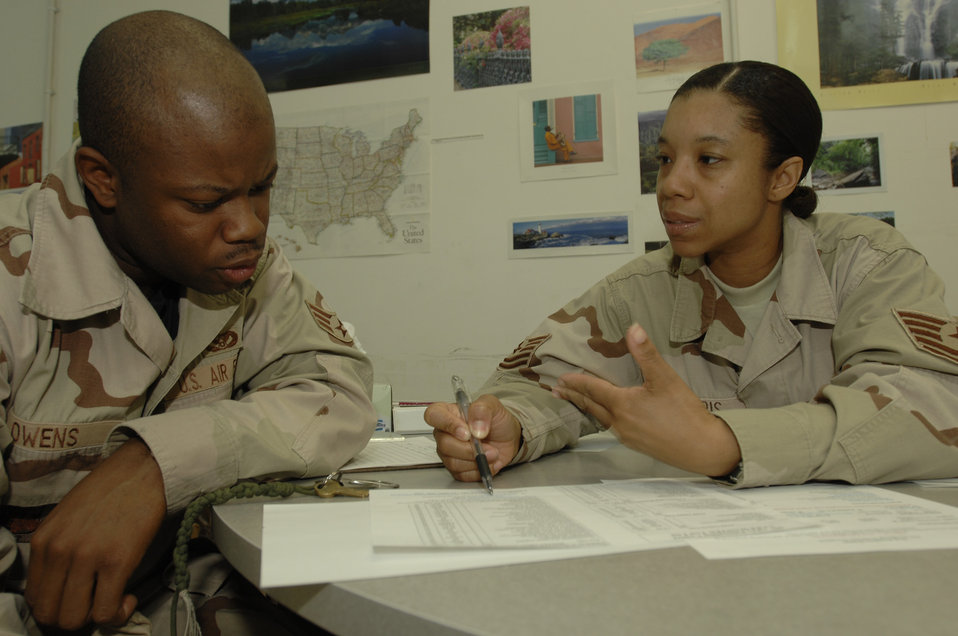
Education opportunities open doors for deployed members

Tech. Sgt. Lisa Harris explains to Senior Airman Eric Owens all the College Level Examination Program tests available for him to take Jan. 3 at Ali Base, Iraq. The 407th Expeditionary Services Squadron Education Center gives servicemembers the opportunity to further their education and career development. Airman Owens is assigned to the 407th Expeditionary Civil Engineer Squadron and is deployed from Hickam Air Force Base, Hawaii. Sergeant Harris is assigned to the 407th Expeditionary Services Squadron and is deployed from Andrews AFB, Md.